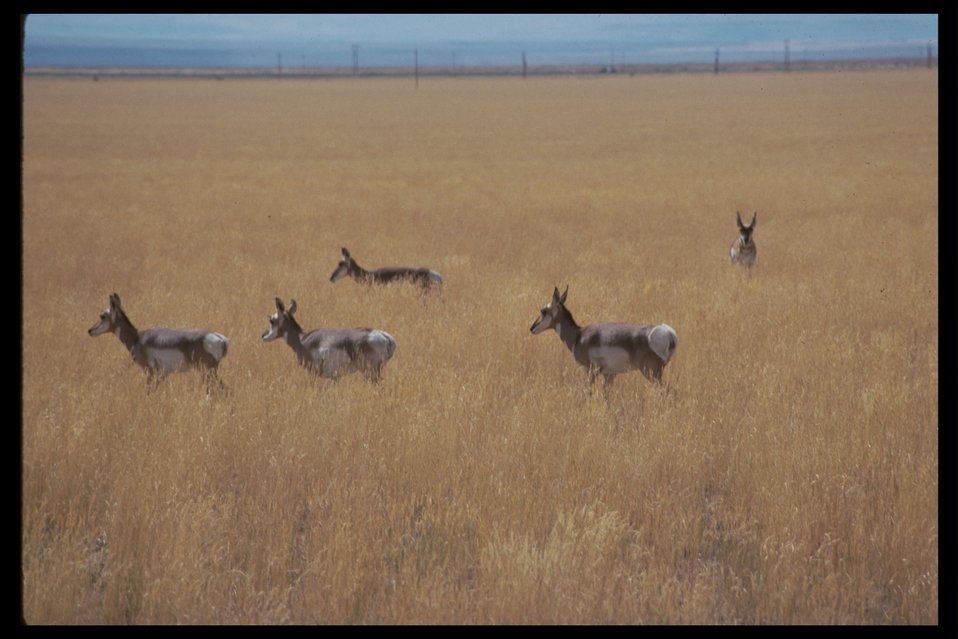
Prong Horn Antelope in Catlow Valley.